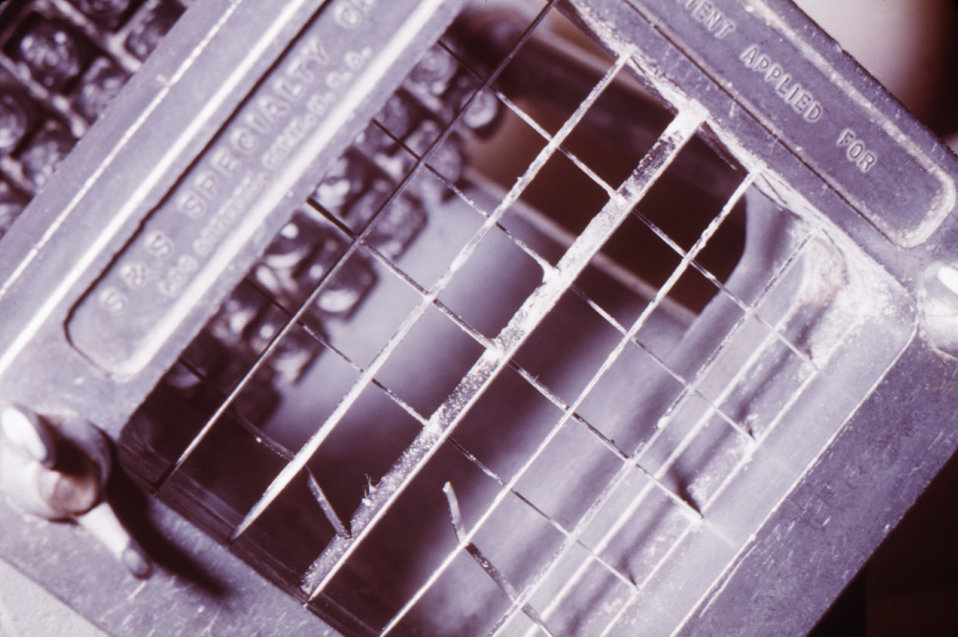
This photograph reveals the head of an unclean french fry cutter with its broken cutting blades, which makes it hard to clean.